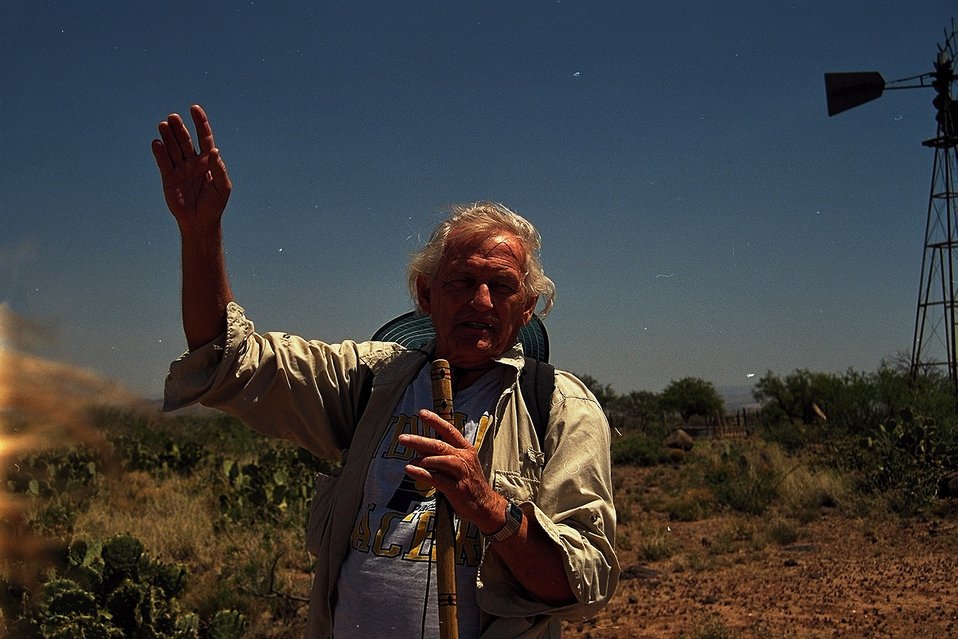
A wise man stands in front of the the entrance to the Agua Fria National Monument just beyond Sunset Point (marked by windmill).